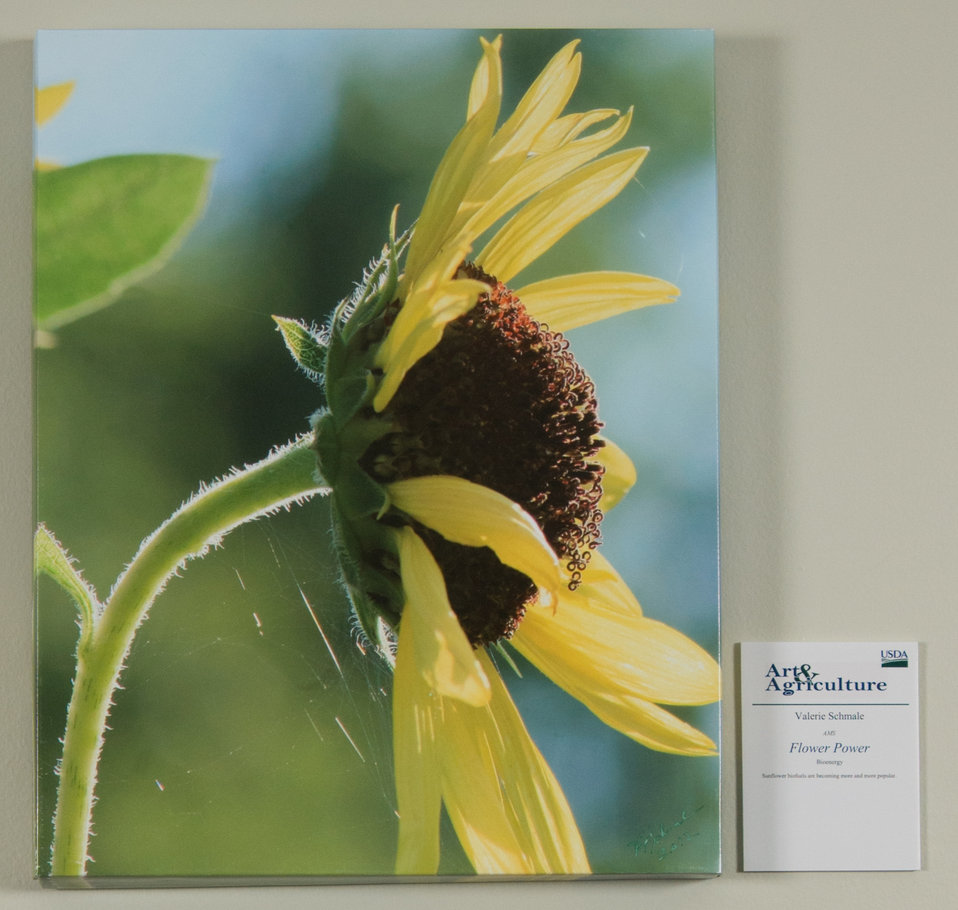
Online Viewer's Choice entries of the 2013 Art & Agriculture, Tuesday, July 9, 2013, in the South Building, Washington, D.C. Themes were expressed by employees from across the department and the contest was open to full-time and part-time USDA employees. Winning artwork will be displayed till the end of the year. U.S. Artistic expression is a creative outlet that is vital for an individual to grow and develop.